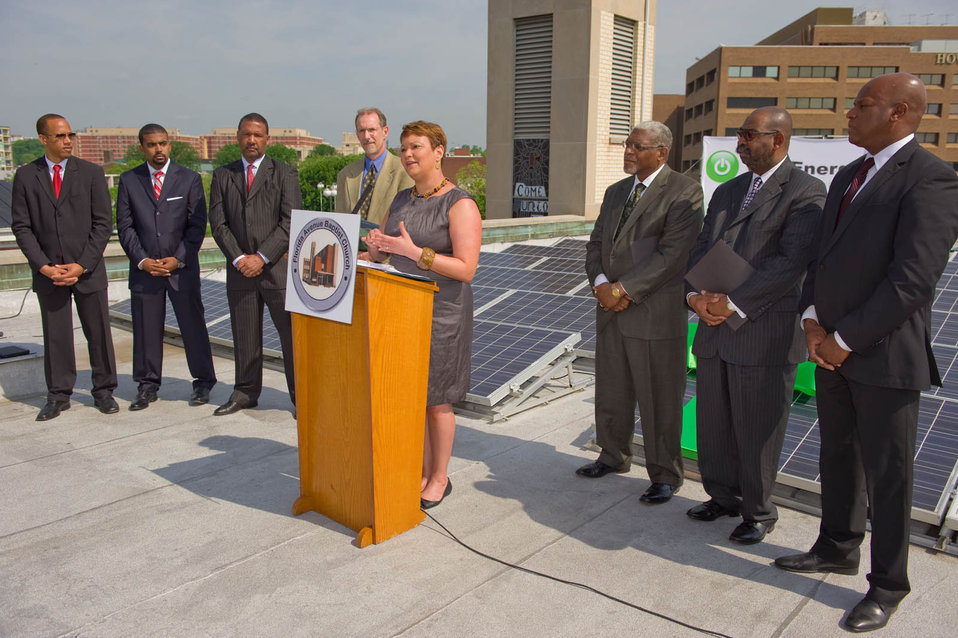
2011-05-03 FlaAveSolar 014